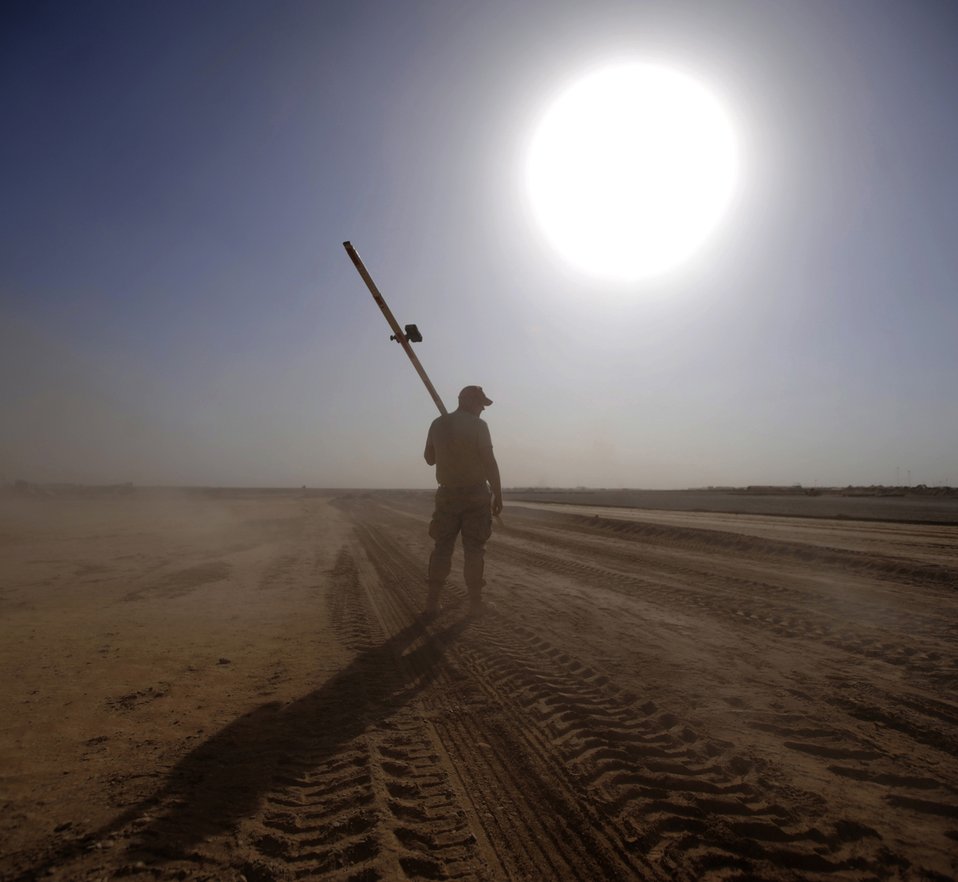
From dirt to runway, the RED HORSE way

Airman 1st Class Davis Smith carries a guide used in airfield construction Sept. 9, 2009, at Forward Operating Base Dwyer, Afghanistan. He is part of a team preparing the area for a runway that will allow C-17 Globemaster IIIs to deliver cargo and people directly to FOB Dwyer. Airman Smith is assigned to the 1st Expeditionary RED HORSE Group.